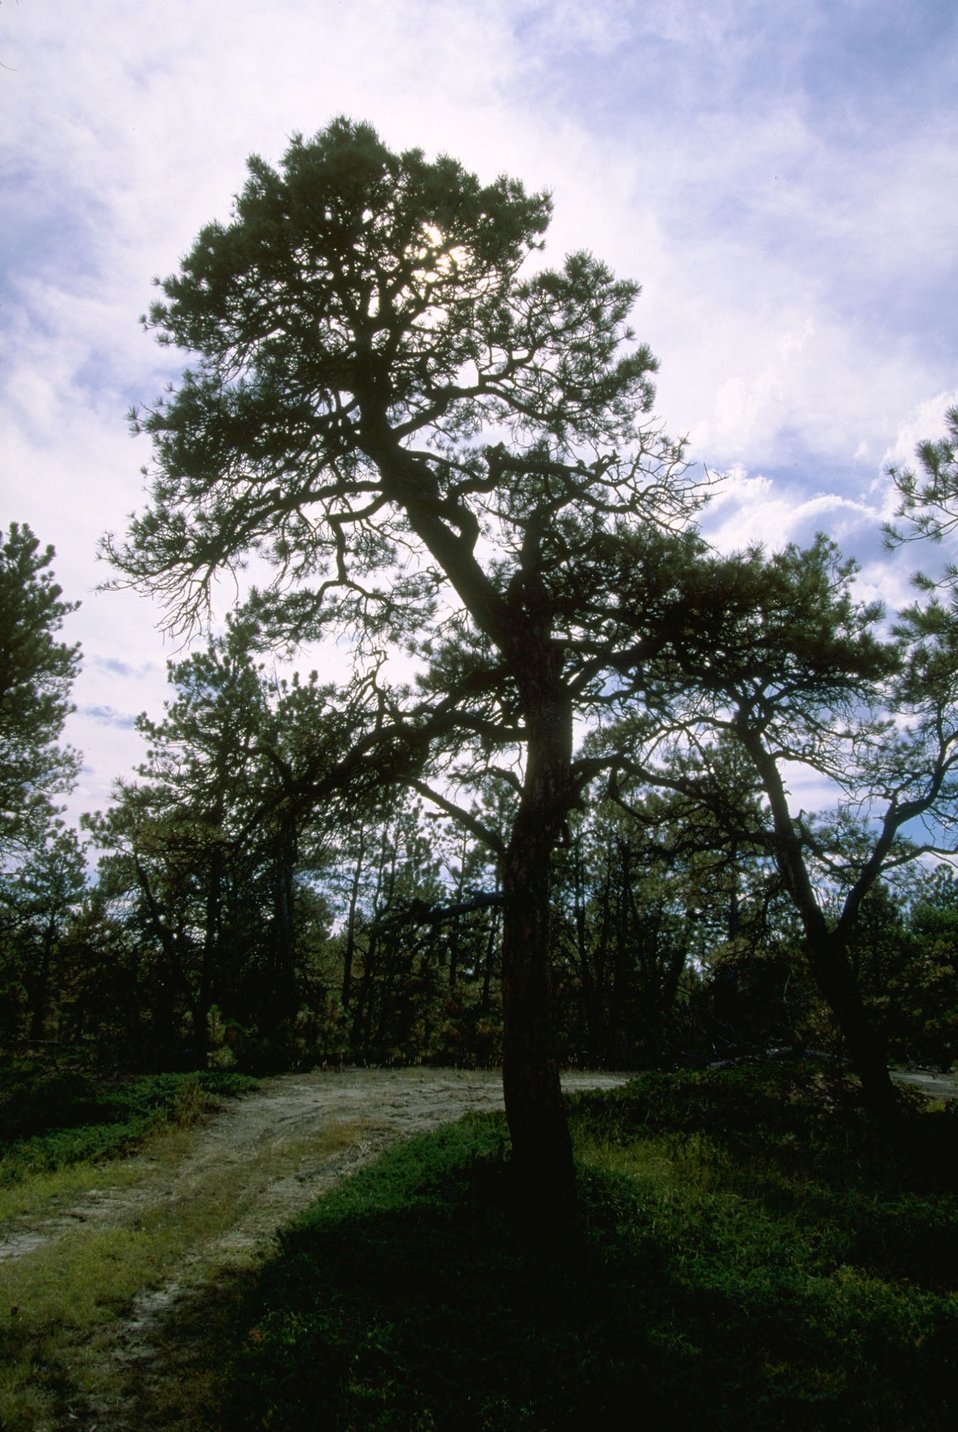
Acid Shale Area of Critical Environmental Concern (ACEC)